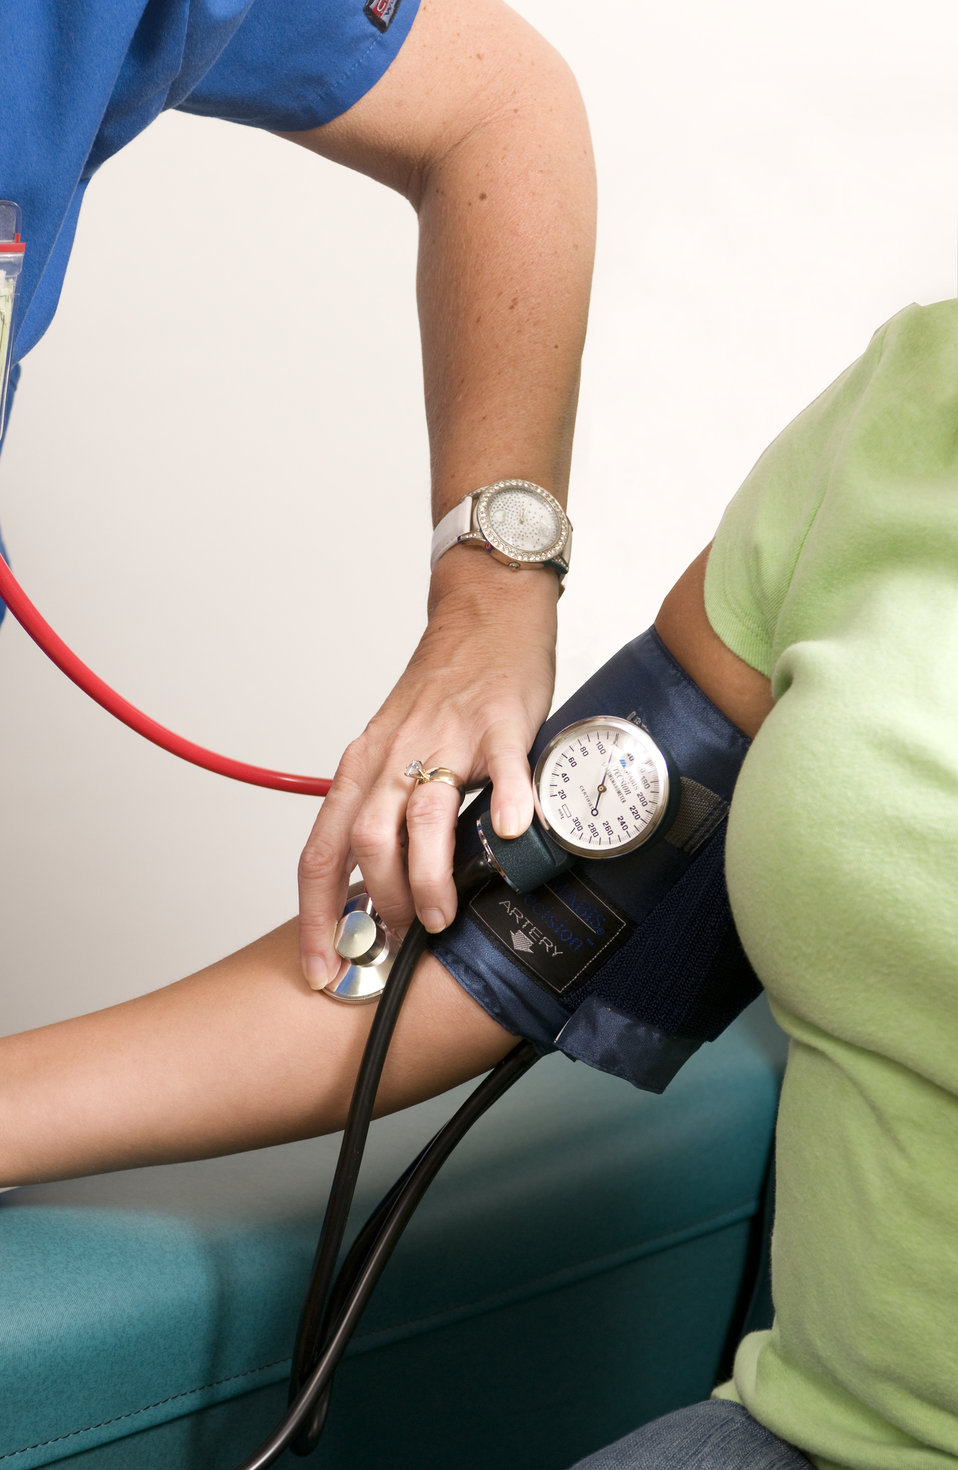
This image depicts a female clinician in the process of conducting a blood pressure examination upon a seated female patient in a clinical setting. The healthcare provider was using a sphygmomanometer, consisting of a pressurized cuff encircling the patient's right upper arm, and a monitor indicating changes in pressure within the cuff, as well as a stethoscope in order to listen for, and record the sounds indicative of the high (systolic), and low (diastolic) pressure values used to measure a patient's blood pressure.